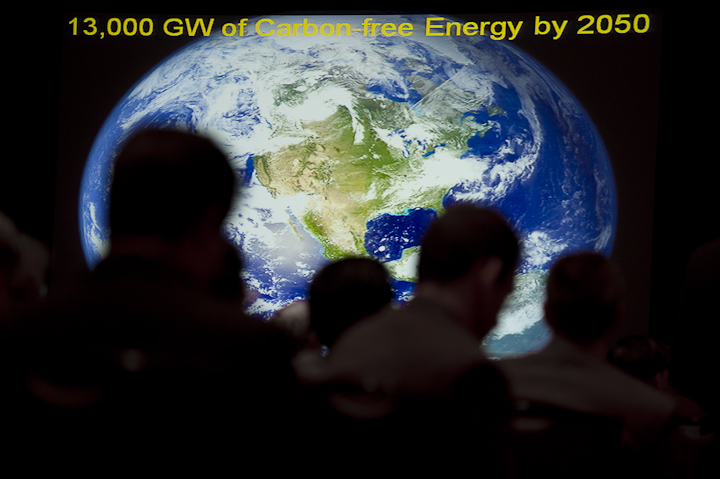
SunShot Bright Source Presentation

June 13, 2012- John Woolard, President and CEO of Bright Source Energy speaks the plenary session of the SunShot Grand Challenge Summit and Technology Forum in Denver, Colorado.